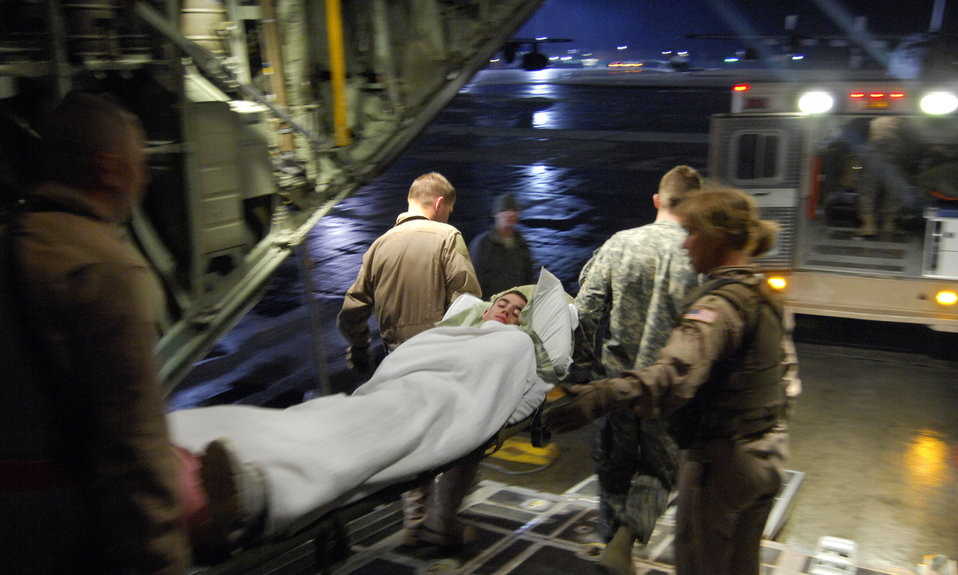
Flight nurse provides care in the air

Members of the 455th Aeromedical Evacuation Flight carry Airman 1st Class Brent Noah to an ambulance at Bagram Airfield, Afghanistan, March 26. Airman Noah, assigned to the 376th Expeditionary Aircraft Maintenance Squadron at Manas Air Base, Kyrgyzstan, dislocated his hip and was being flown to Bagram Airfield for treatment.